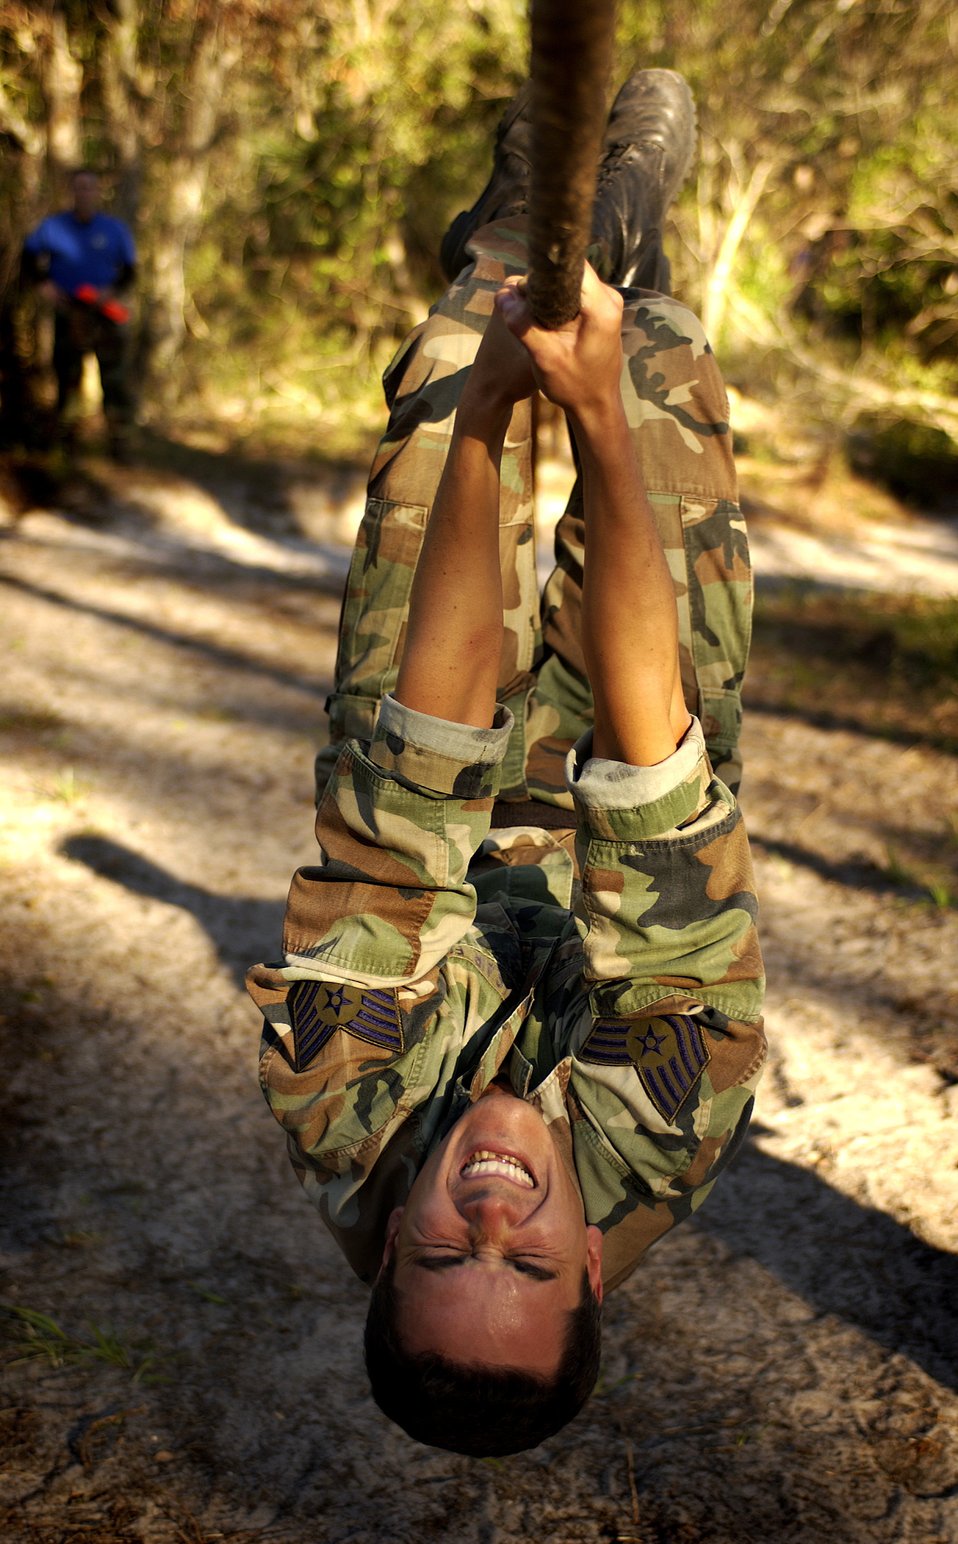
Don't give up now

AVON PARK, Fla. -- Staff Sgt. Charles Rushing pulls himself across a rope obstacle during Dragon Challenge 04 here Dec. 5. Dragon Challenge is an annual competition where airmen compete for top honor in physical strength, endurance, mental and emotional challenges. Sergeant Rushing is assigned to the 18th Weather Squadron at Pope Air Force Base, N.C.